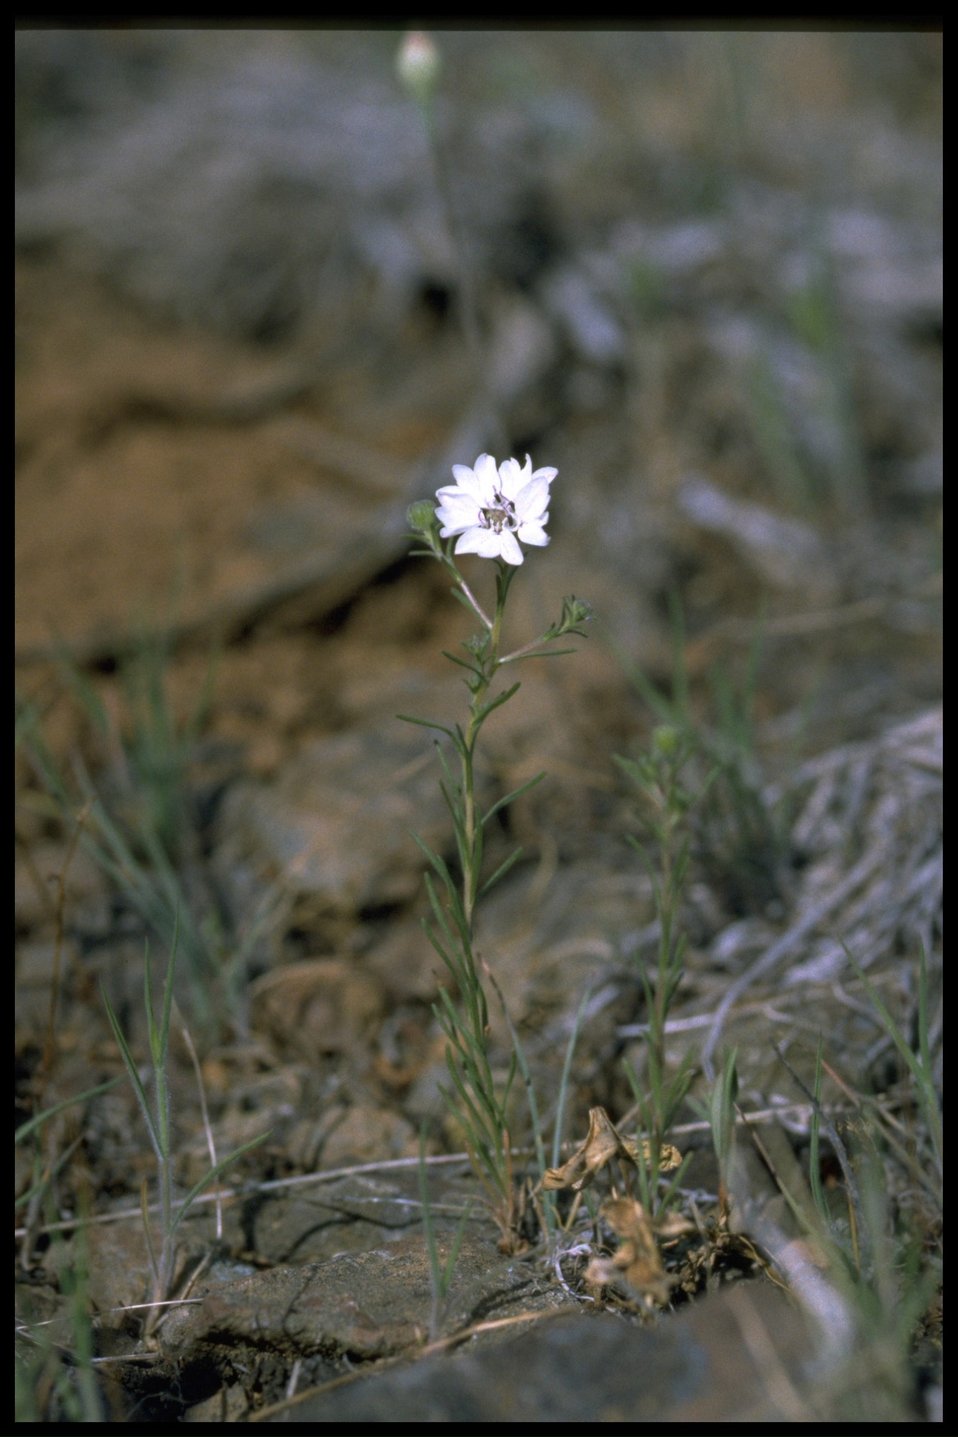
Farshot of Blepharipappus wildflower, whole plant.